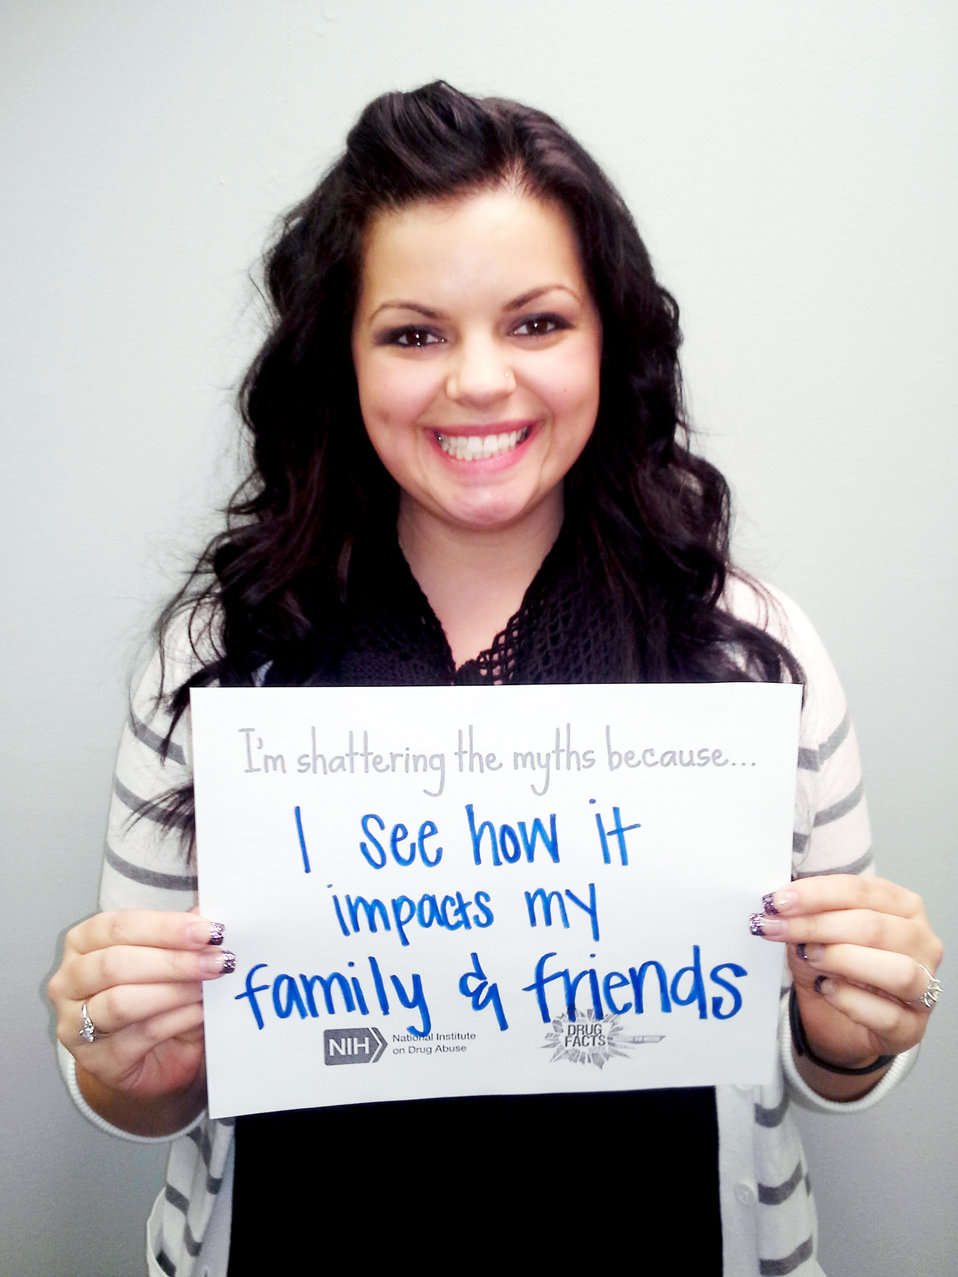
Shattering the Myths campaign in Winona, Minnesota